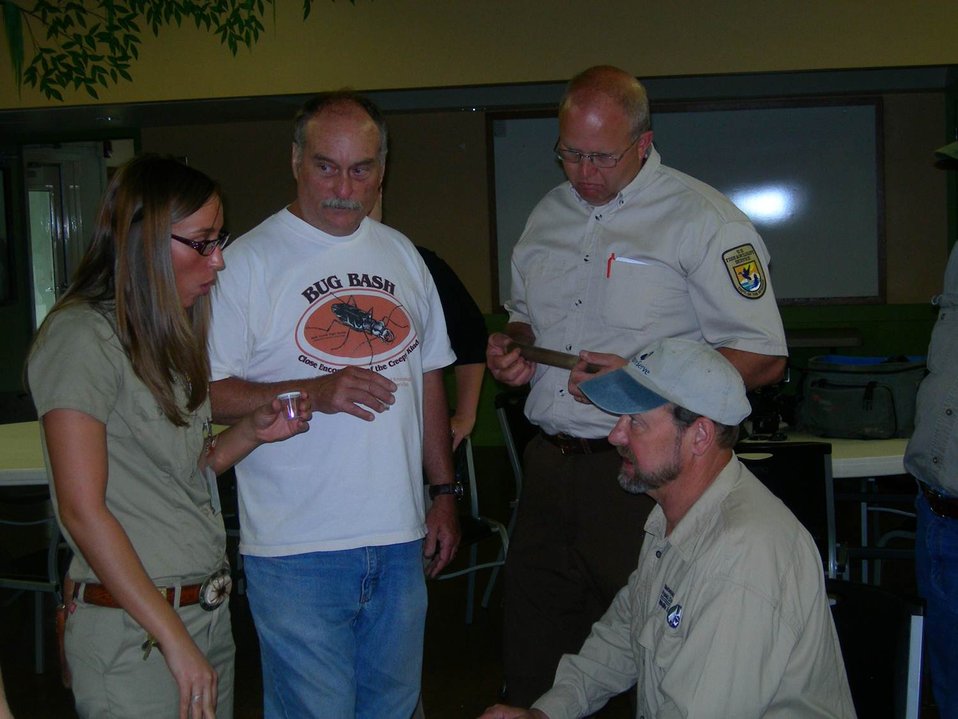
Salt Creek tiger beetle team

Sarah Crosier (L) of the Henry Doorly Zoo, Steve Spomer of the University of Nebraska, Robert Harms of the Service, and Mike Fritz of the Nebraska Game and Parks Commission discuss soil composition in the larval tubes.